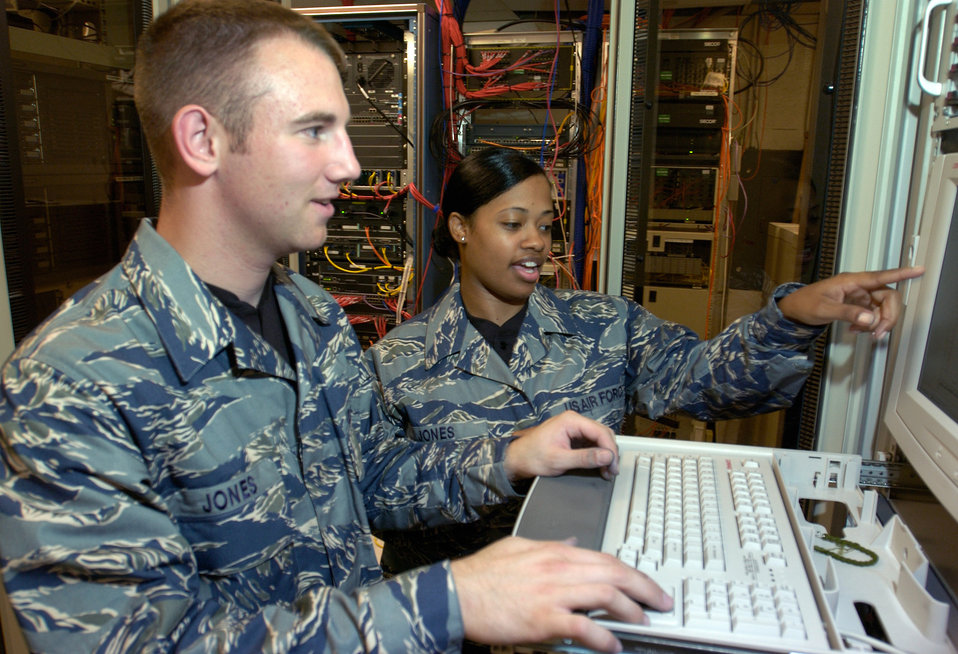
Besko and Wyatt

BOLLING AIR FORCE BASE, D.C. (AFPN) -- Airman 1st Class Jonathan Besko (left) and Senior Airman Brandi Wyatt, both with the 11th Communication Squadron here, try out the Air Force test utility uniform in a computer server room. The blue, gray and green tiger-stripe camouflage ensemble includes many new features intended to increase functionality while providing a distinctive look for the 21st century airmen. The uniforms will undergo wear-testing beginning in January. Airmen from a cross section of Air Force career fields will provide feedback on the fit, durability and functionality of the proposed ensemble that will come in men's and women's cuts.